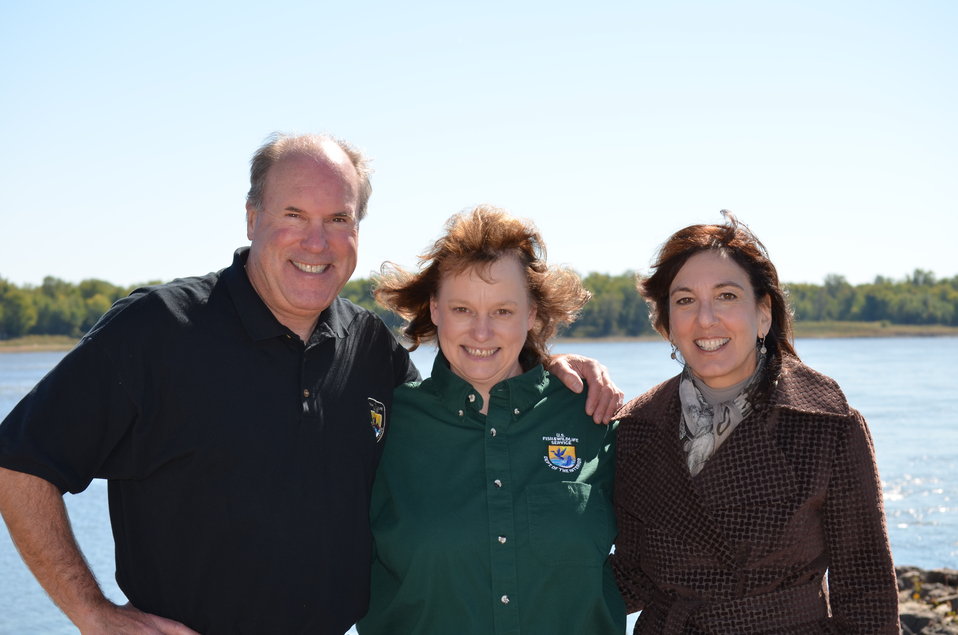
Conservation leadership

Charlie Wooley, USFWS Deputy Regional Director, Kelly Srigley-Werner, USFWS Private Lands Coordinator, and Rachel Jacobson, Acting Asst. Secretary for Fish, Wildlife and Parks at Edward 'Ted' and Pat Jones Confluence State Park. USFWS/Ashley Spratt.